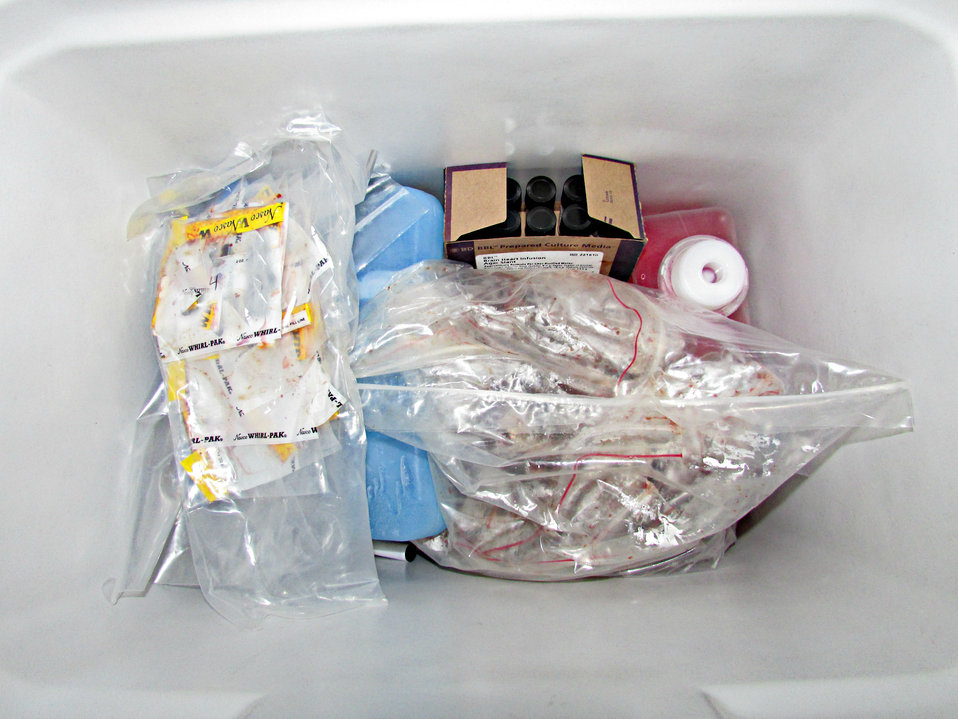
Fish Health

Today we sent rainbow trout samples to the Bozeman Fish Health Center. There they will be tested for a number of different viruses to ensure that our populations are healthy. This is always done before we stock out a group of fish.